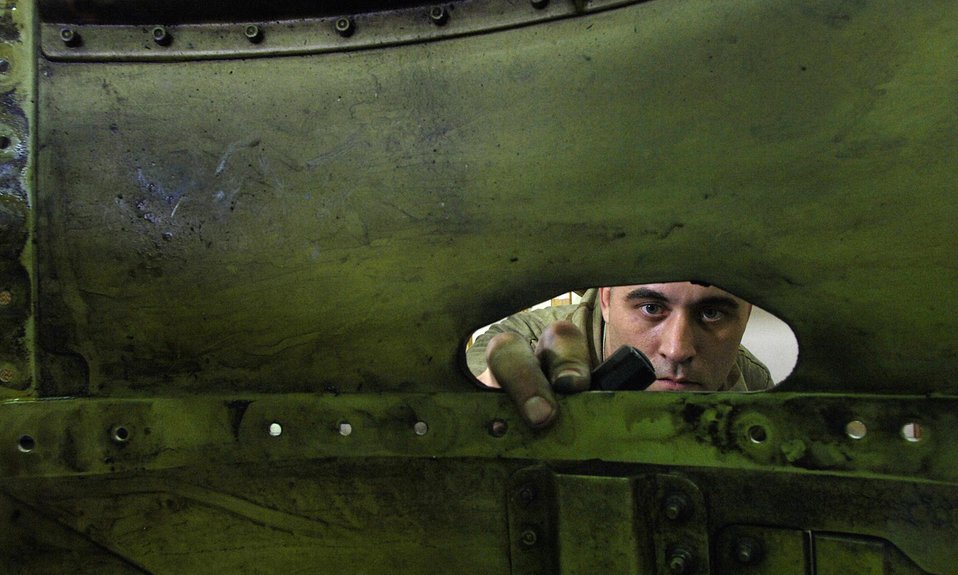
Crack inspection

Staff Sgt. Justin Johnson inspects a panel on an F-16 Fighting Falcon for cracks April 16 at Balad Air Base, Iraq. Sergeant Johnson is with the 332nd Expeditionary Maintenance Squadron.